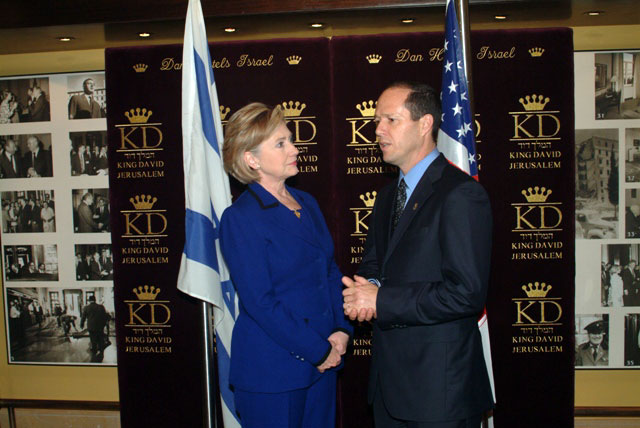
Secretary Clinton meets Jerusalem Mayor Nir Barkat and the King David hotel in Jerusalem March 3, 2009.